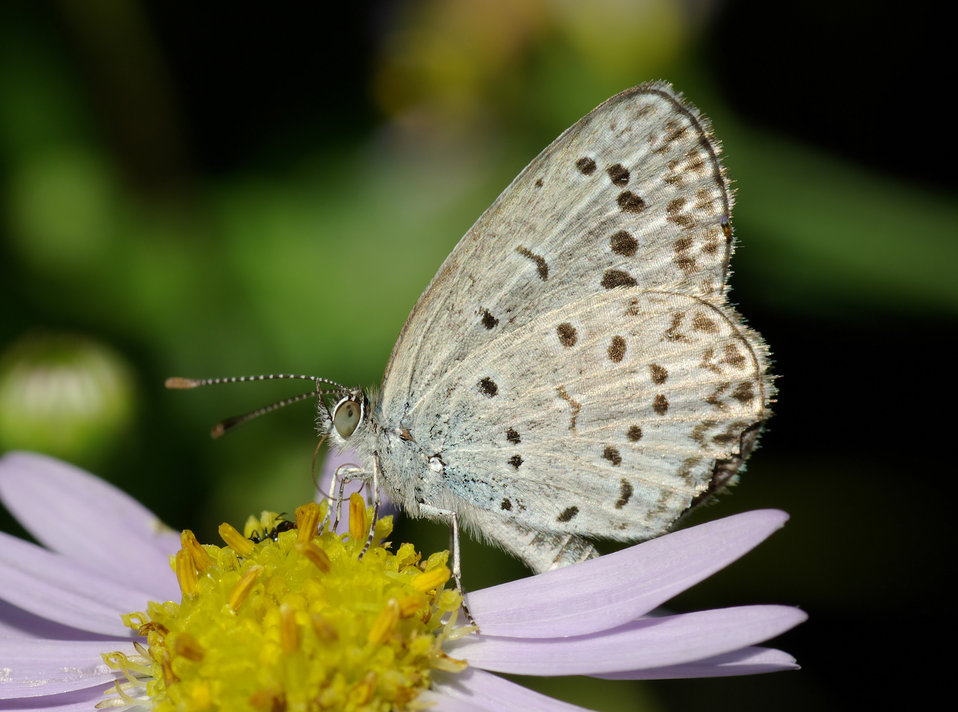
Name Pseudozizeeria maha Family Lycaenidae Pale Grass Blue. 日本語: ヤマトシジミ
Location: Osaka, Japan
Camera Details:
Camera: PENTAX K10D
Lens: TAMRON SP AF90mm F/2.8 Di (Model272E)